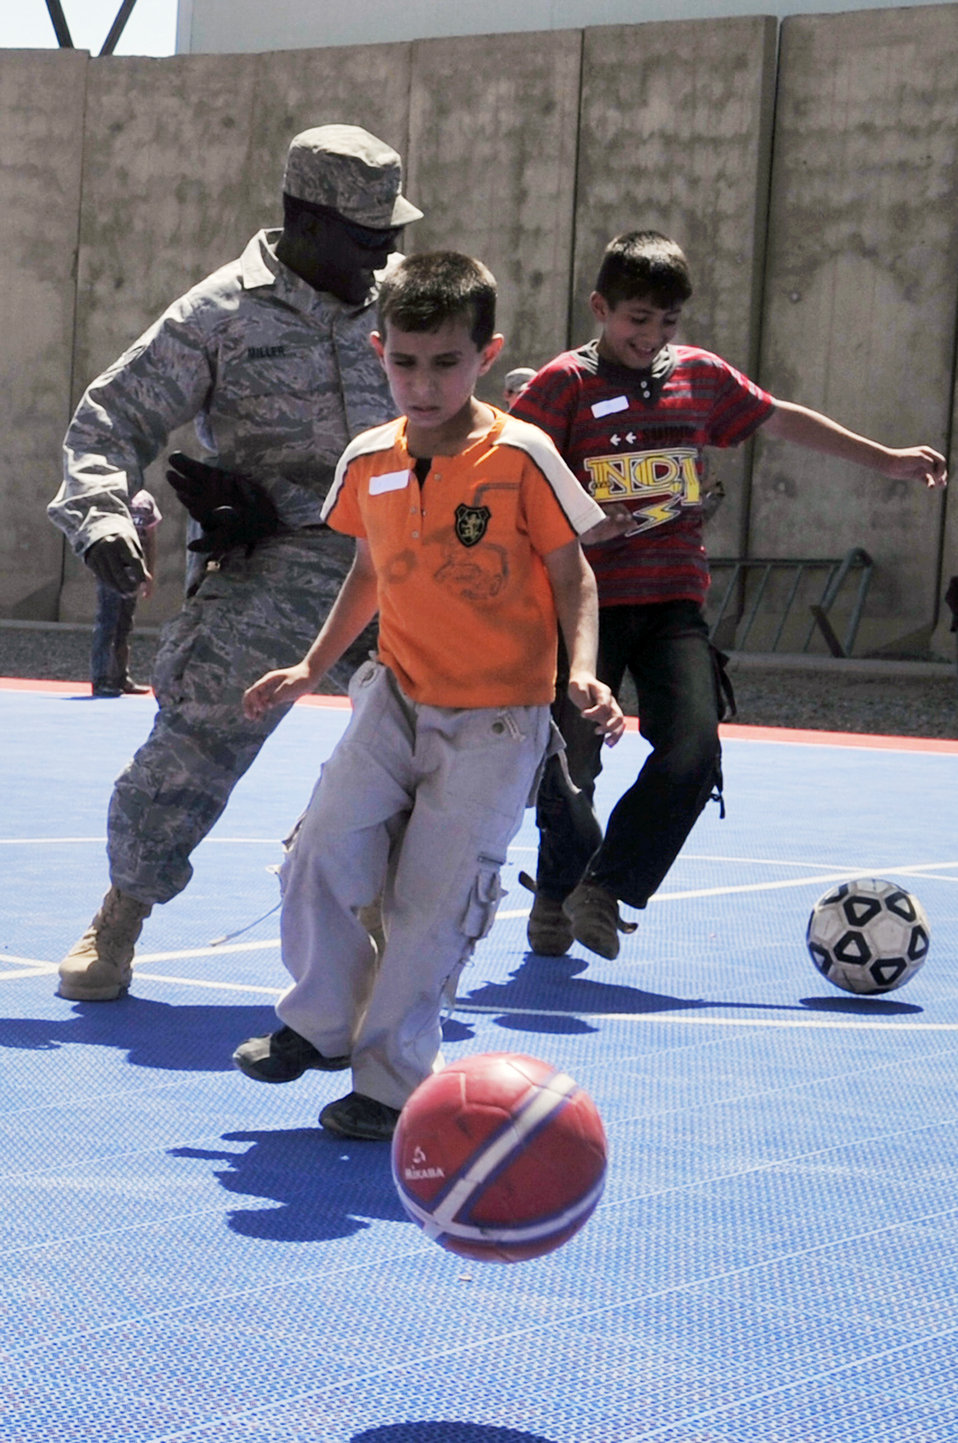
Balad servicemembers strengthen bonds with community, children

An Airman plays kickball with two Iraqi boys during Iraqi Kids Day April 24, 2010, at Joint Base Balad, Iraq.